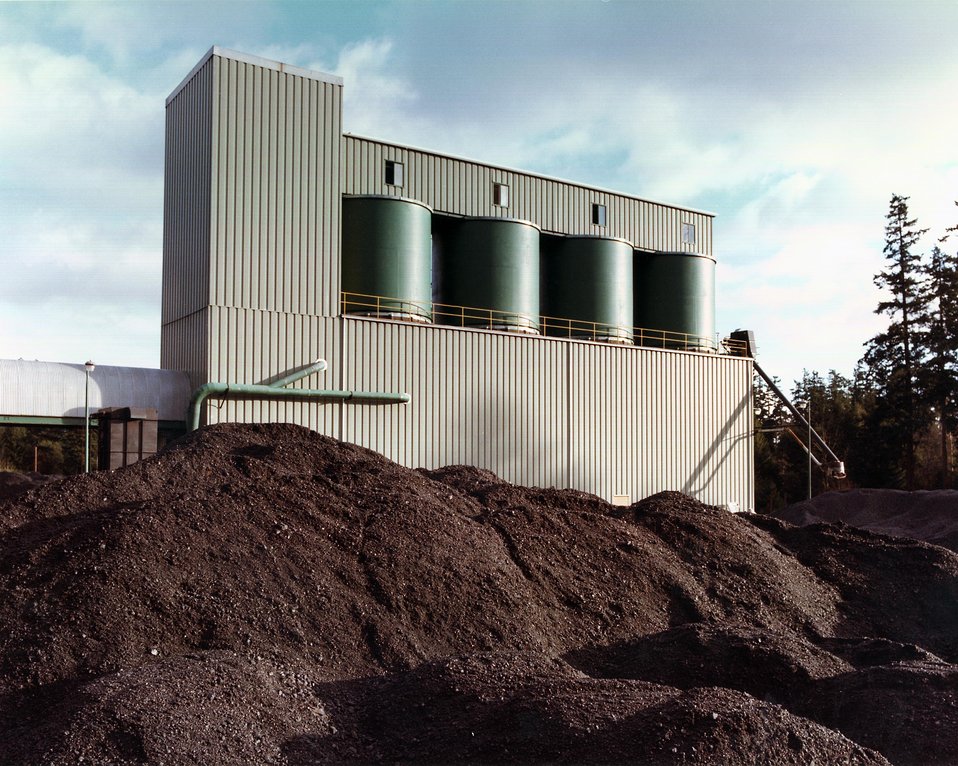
CLOSE-UP OF SOLID SOLVENT REFINED COAL STORAGE BINS.